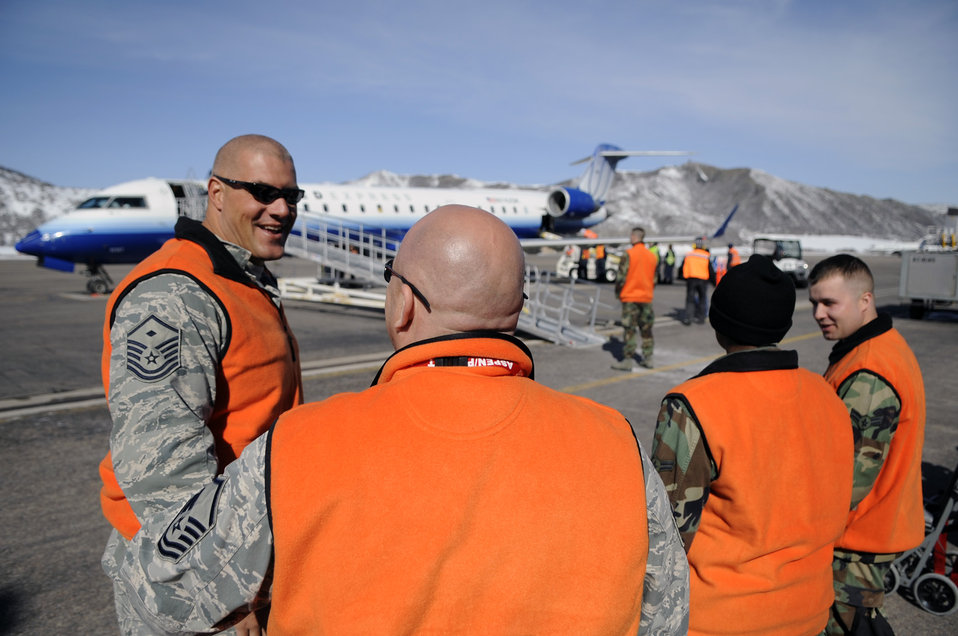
Luke Airmen assist disabled veterans at ski clinic

Airmen from Luke Air Force Base, Ariz. wait to escort veterans off a United aircraft March 28 at the Aspen Airport, Colo. Veterans from all over the world fly into Aspen to attend the Disabled American Veterans Winter Sports Clinic.